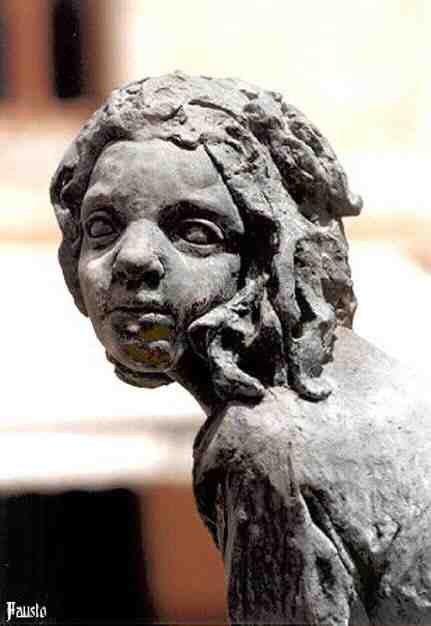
Italiano: Particolare della 'Fontana delle Fanciulle' di Piazza Aldo Moro - Campobello di Licata. Foto realizzata da Fausto Vella